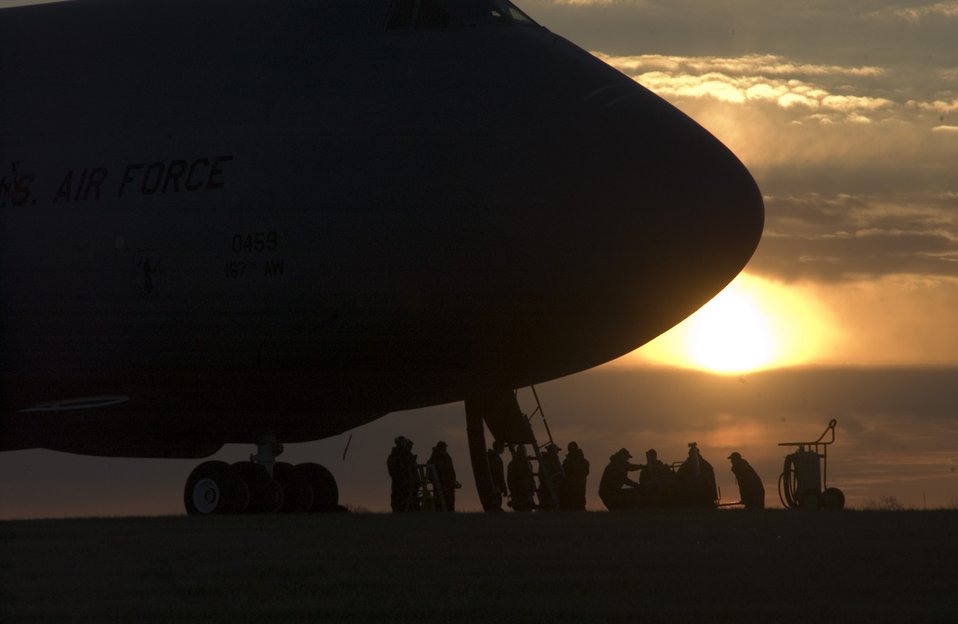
C-5 at Sunrise

Members of the 167th Maintenance Group open up their new C-5 Galaxy Dec. 5 at Martinsburg, W.V. for the fire department to start familiarization training. The C-5 was recently flown from Altus Air Force Base, Oklahoma City, Okla.